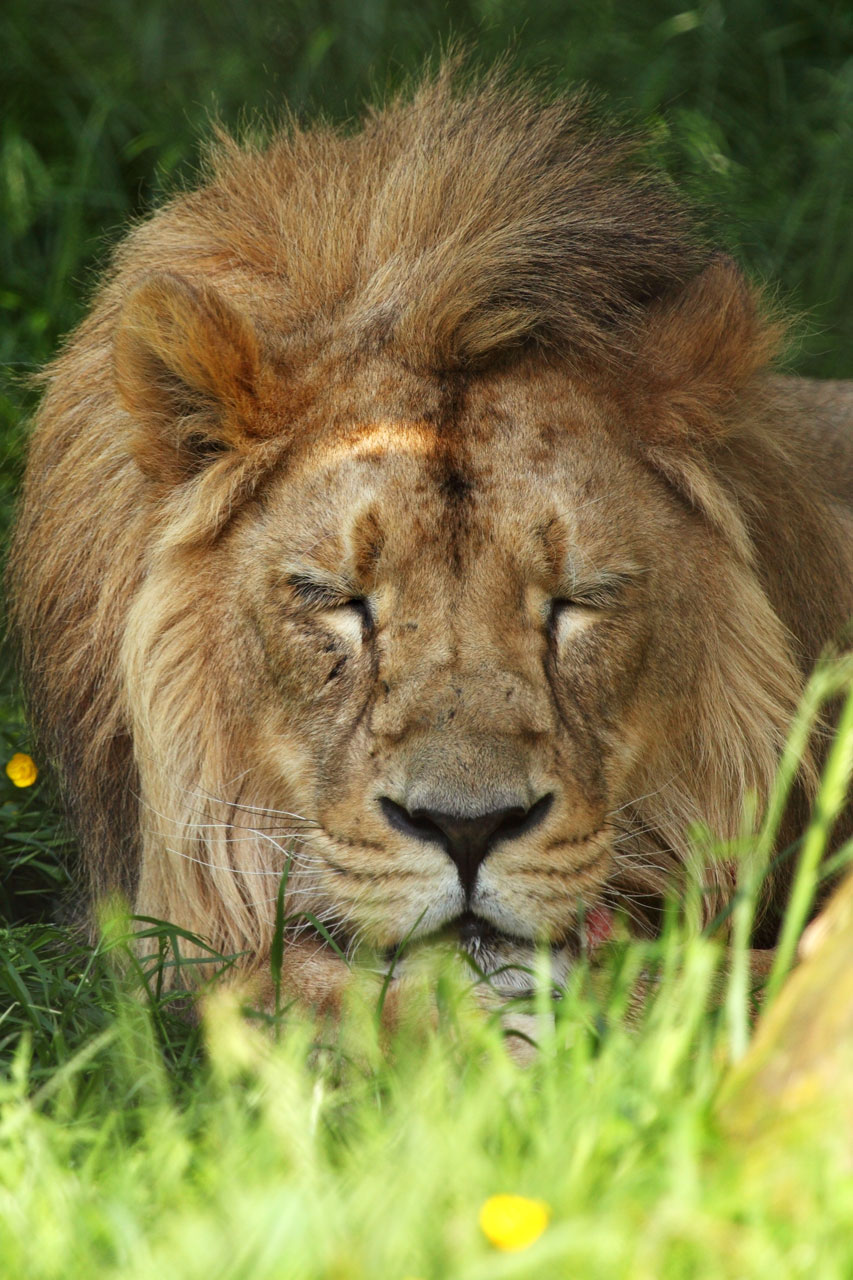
Resting lion

Big lion sleeping on grass in shade.